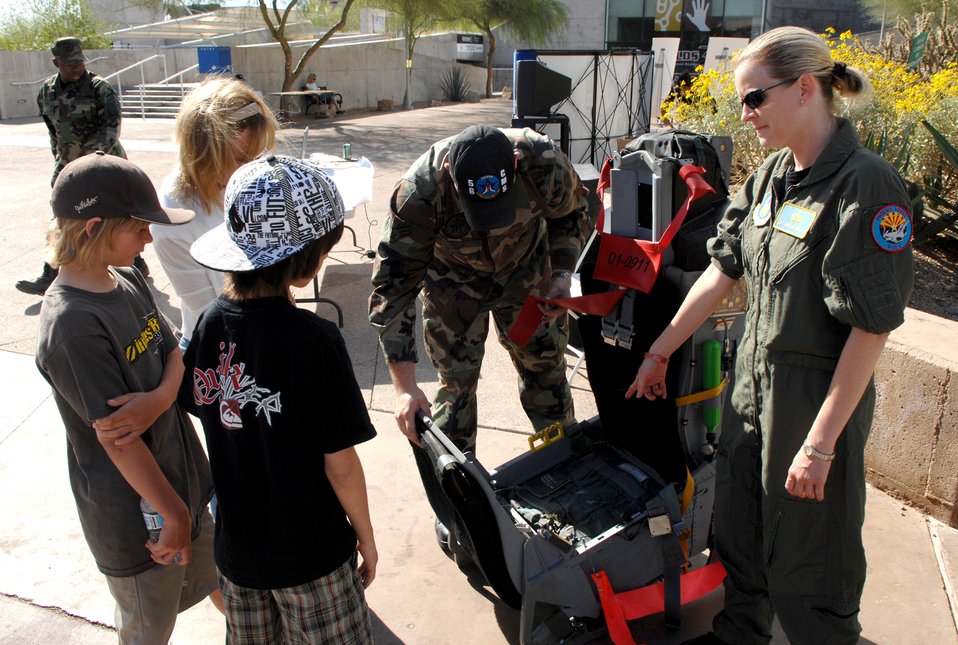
Air Force Week displays highlight airpower

Senior Airman Rex Hicks (left) and Tech. Sgt. Erin Buchanan demonstrate an ejection seat outside the Arizona Science Center in downtown Phoenix during Air Force Week. Sergeant Buchanan is with the 302nd Fighter Squadron and Airman Hicks is with the 56th Component Maintenance Squadron at nearby Luke Air Force Base.